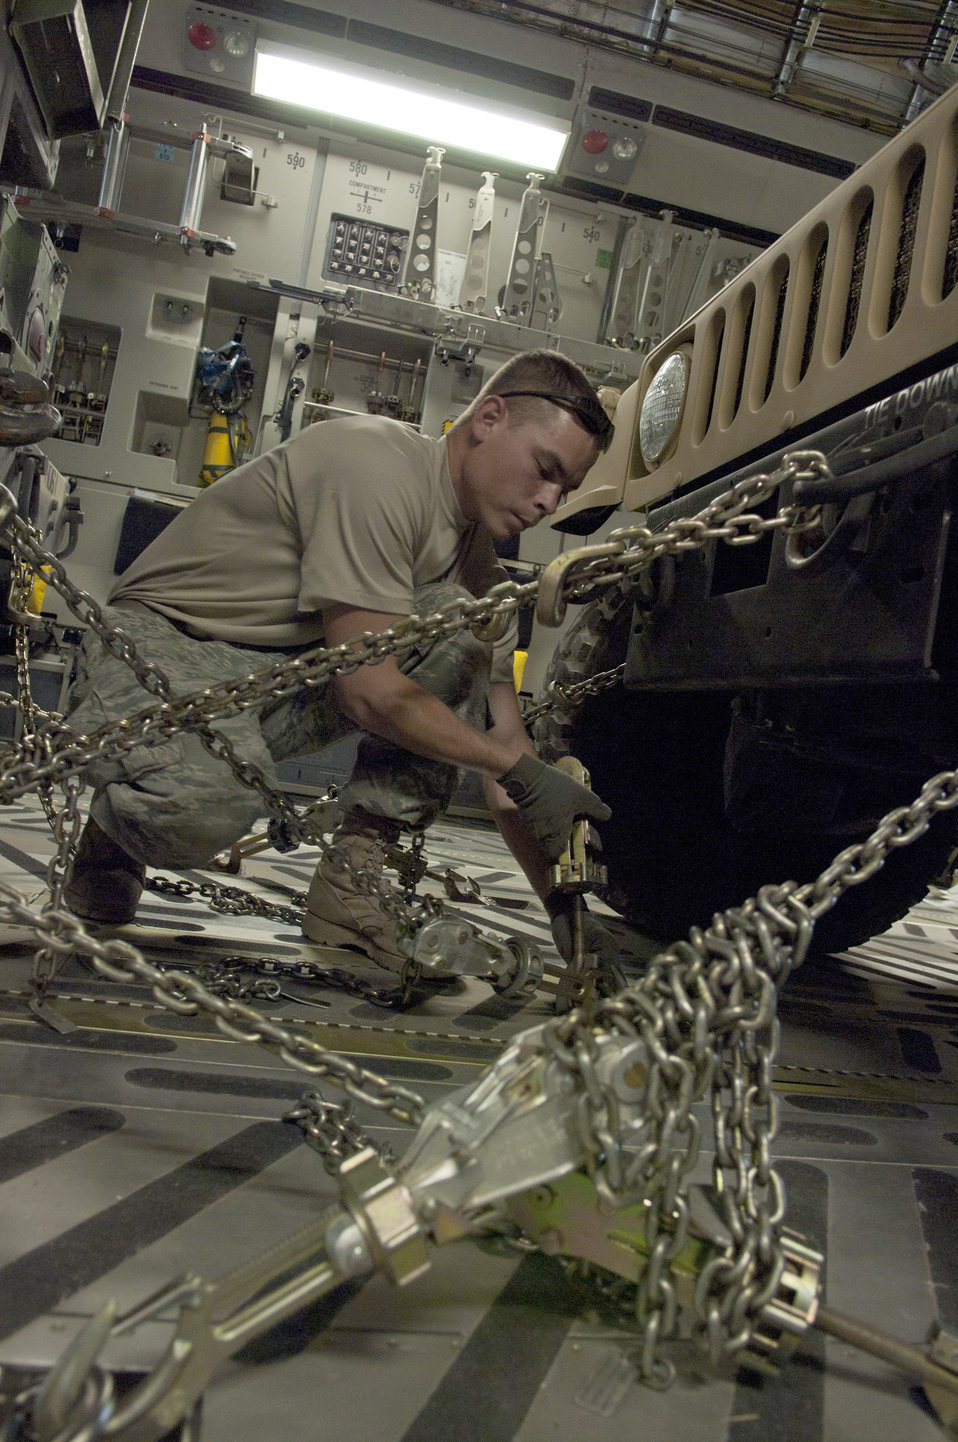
Loading a C-17

Senior Airman Justin Emerson anchors a Humvee inside the cargo bay of a C-17 Globemaster III June 13, 2011, at Bagram Airfield, Afghanistan. Airman Emerson is assigned to the 455th Expeditionary Aerial Port Squadron.